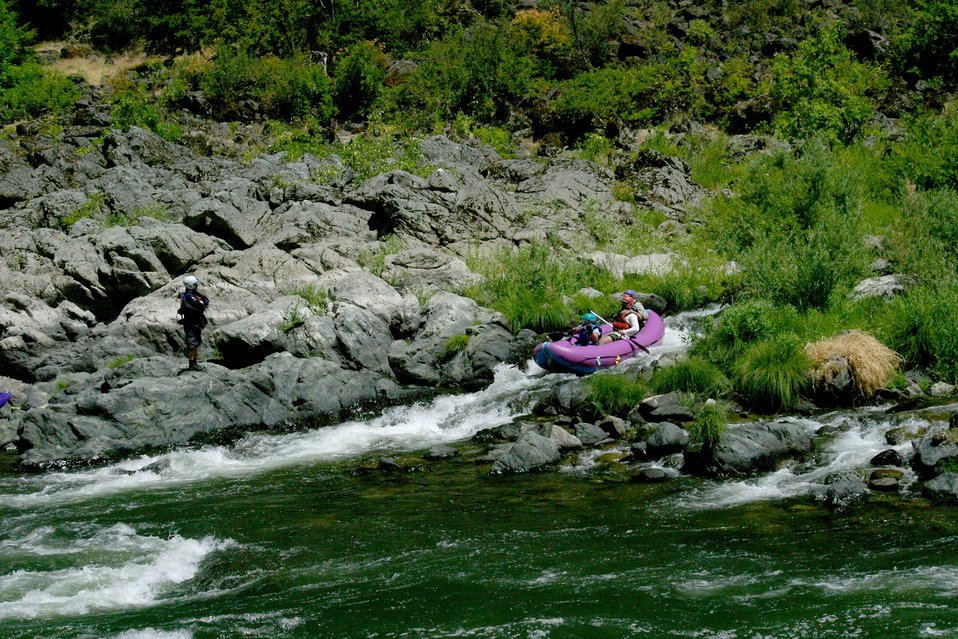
Rainie Falls Fish Ladder